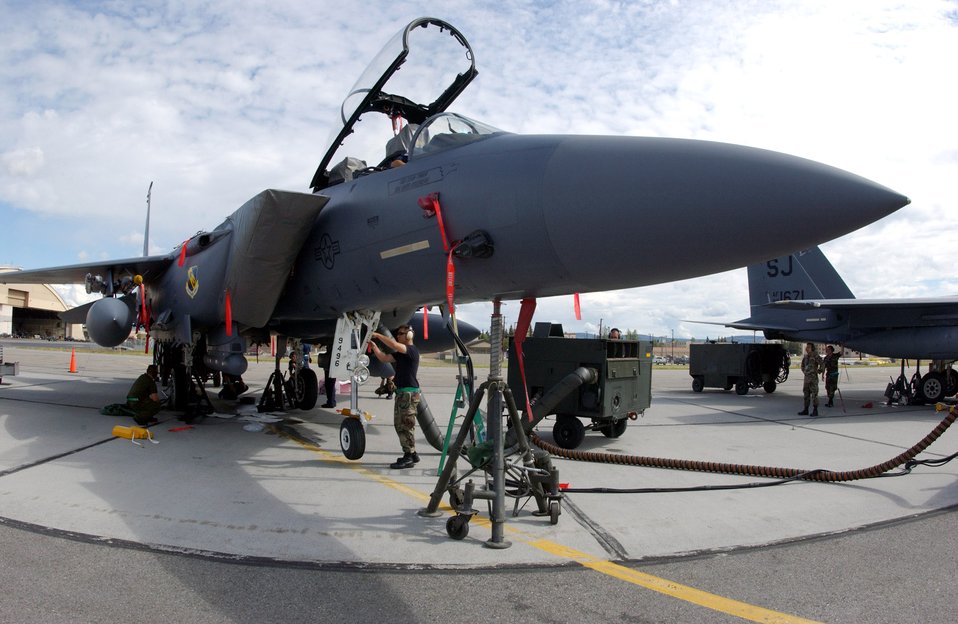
Maintaining aircraft at Red Flag-Alaska 2007

Maintainers from the 335th Aircraft Maintenance Unit at Seymour Johnson Air Force Base, N.C., perform a